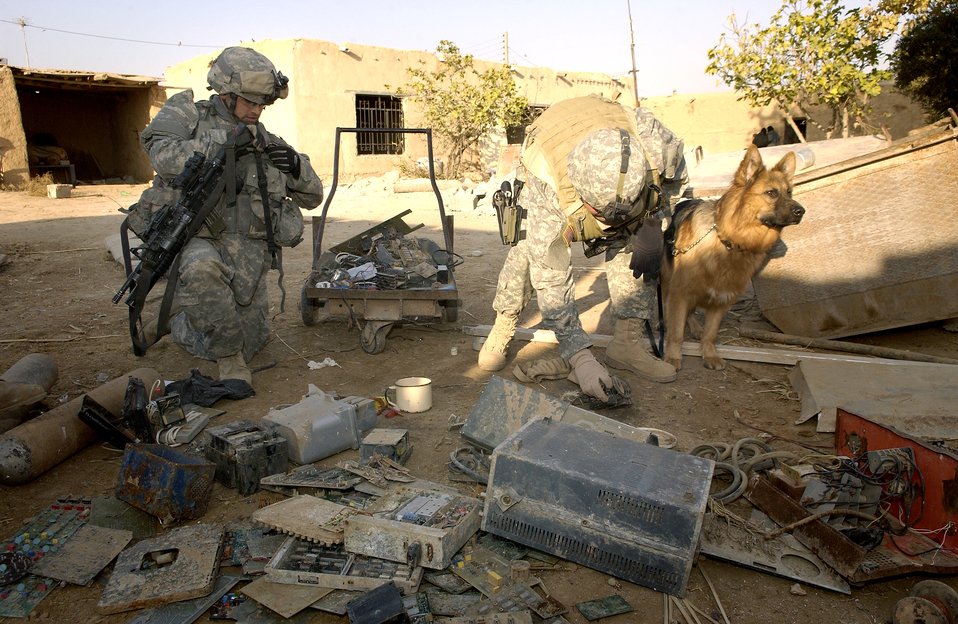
The nose knows

Staff Sgt. Russell McLaughlin (right) and Army Pfc. Samuel Medrano load up materials for making improvised explosive devices found in the village of Tall Qabb, Kirkuk Province. Many Air Force military working dogs and handlers are attached to Army units supporting operatins in Iraq and Afghanistan. Sergeant McLauglin is a K-9 dog handler attached to the 25th Infantry Division. Private Medrano is from Alpha Company, 2nd Battalion, 35th Infantry Regiment, 25th Infantry Division.